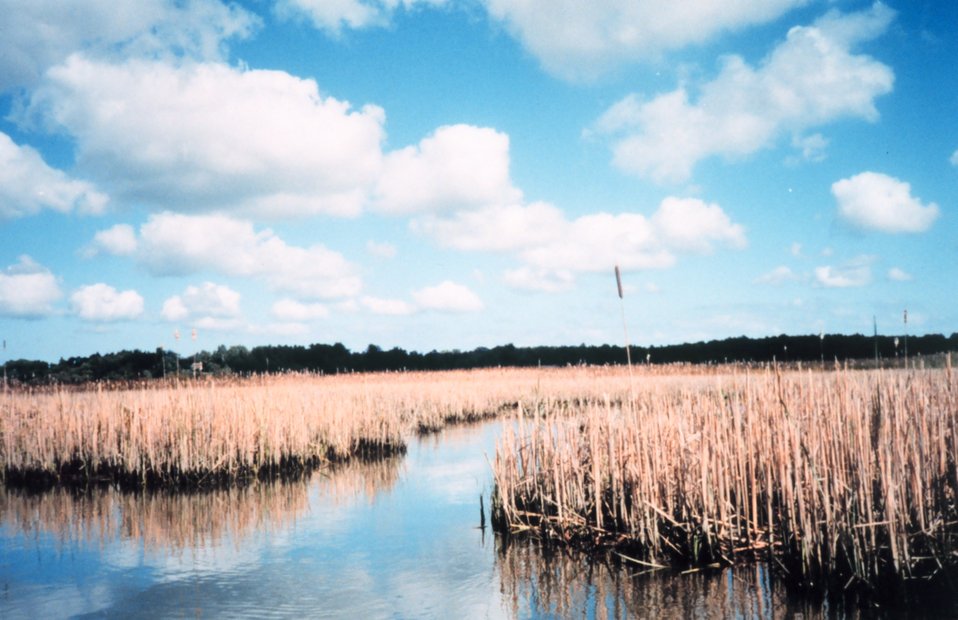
Marsh vegetation on the Patuxent